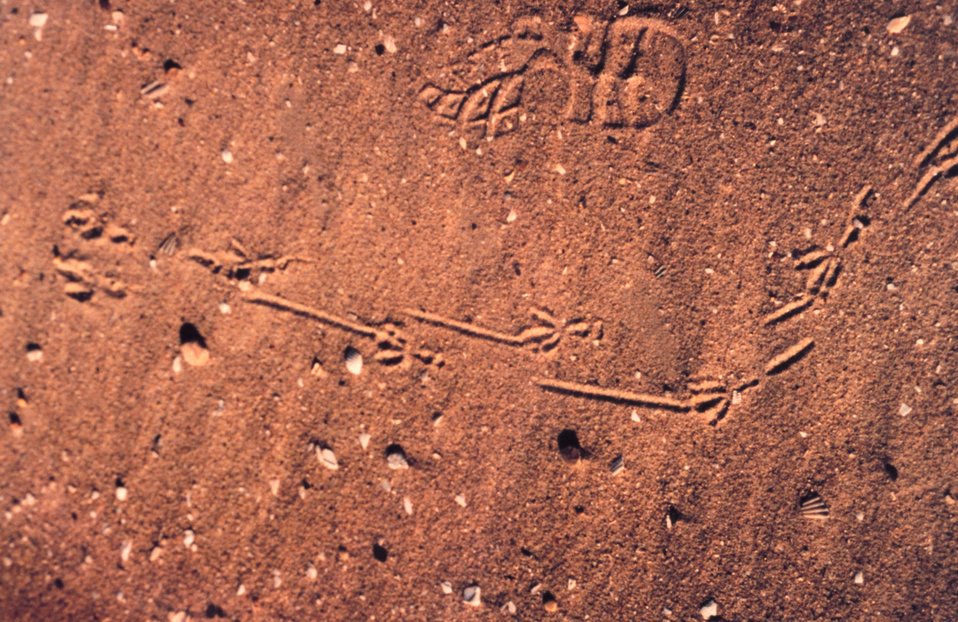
Footprints in the sand. The large footprint at the top was apparently made by Homo sapiens.